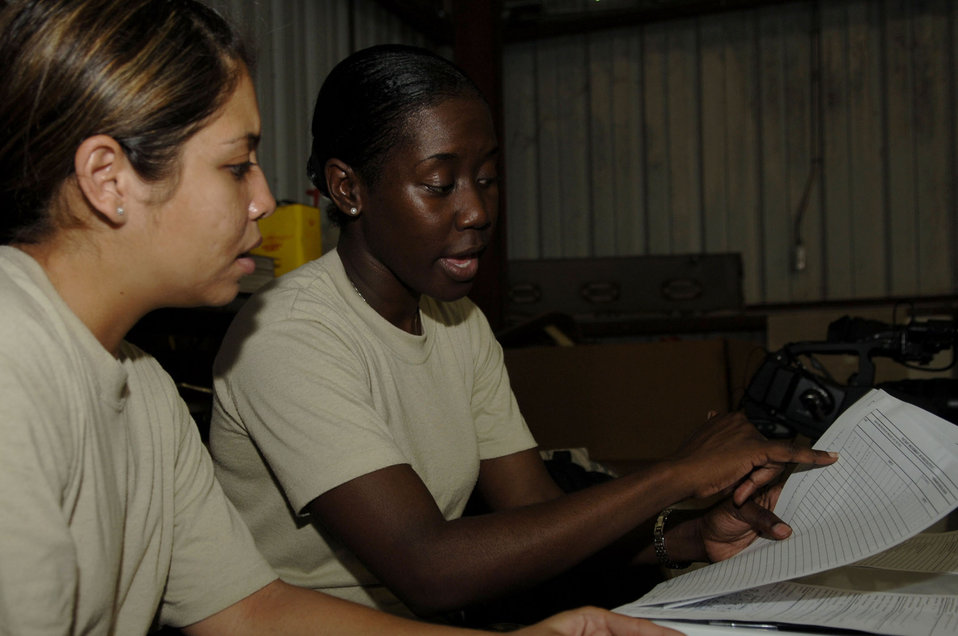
MacDill AFB medical team supports hurricane relief efforts

Staff Sgt. Jennifer Corbin and Tech. Sgt. Jameria Doyle look at administrative paperwork before evacuees arrive. Both Airmen deployed to Corpus Christi, Texas, in support of evacuation efforts for Hurricane Ike. Sergeant Doyle is from Dobbins Air Reserve Base, Ga. Sergeant Corbin is from MacDill Air Force Base, Fla.